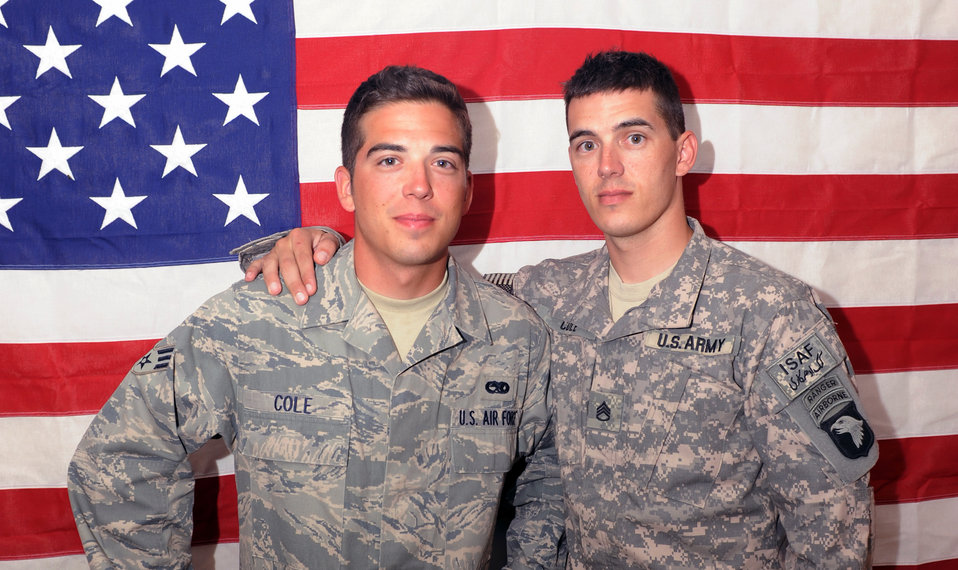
Brothers-in-arms

Army Staff Sgt. Jonathan Cole (left) and Senior Airman William Cole stand together at Bagram Airfield, Afghanistan. Sergeant Cole is a member of the 101st Airborne Division and Airman Cole is assigned to the 336th Aircraft Maintenance Unit at Bagram Airfield.